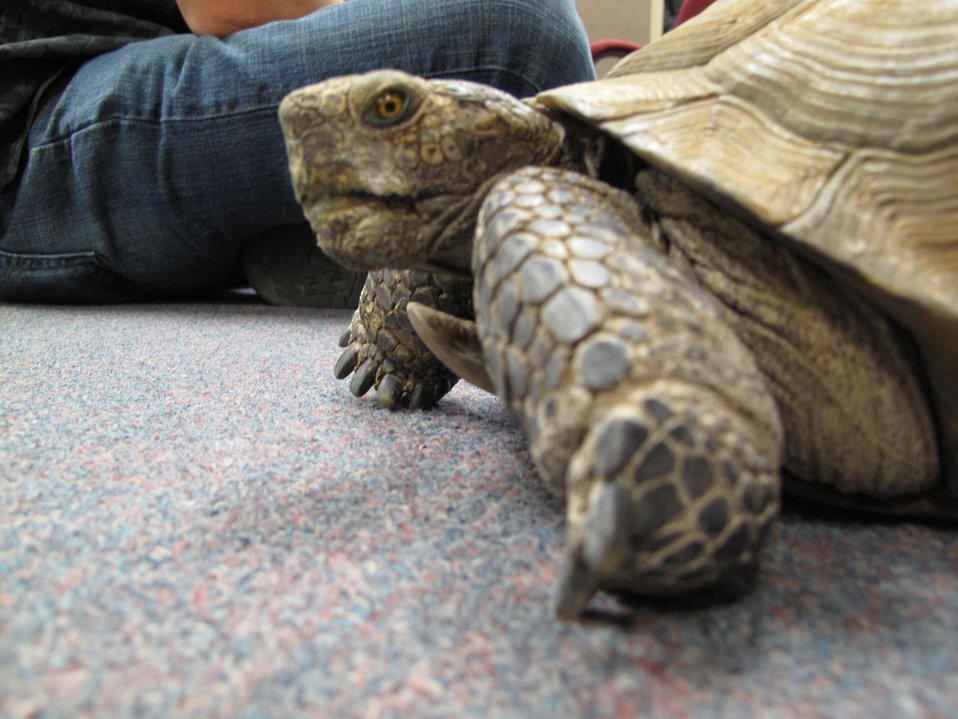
Desert Tortoise